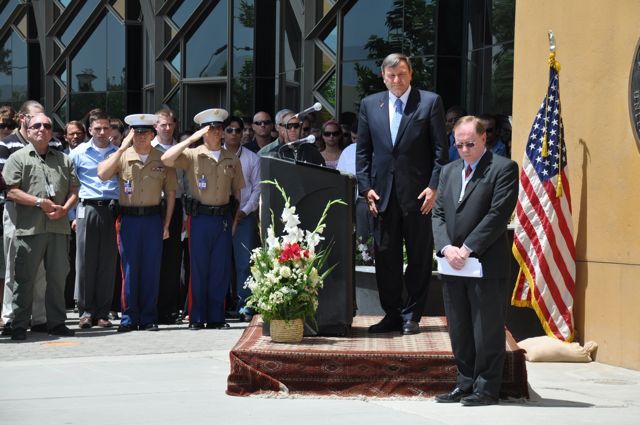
Memorial Day at US Embassy in Kabul